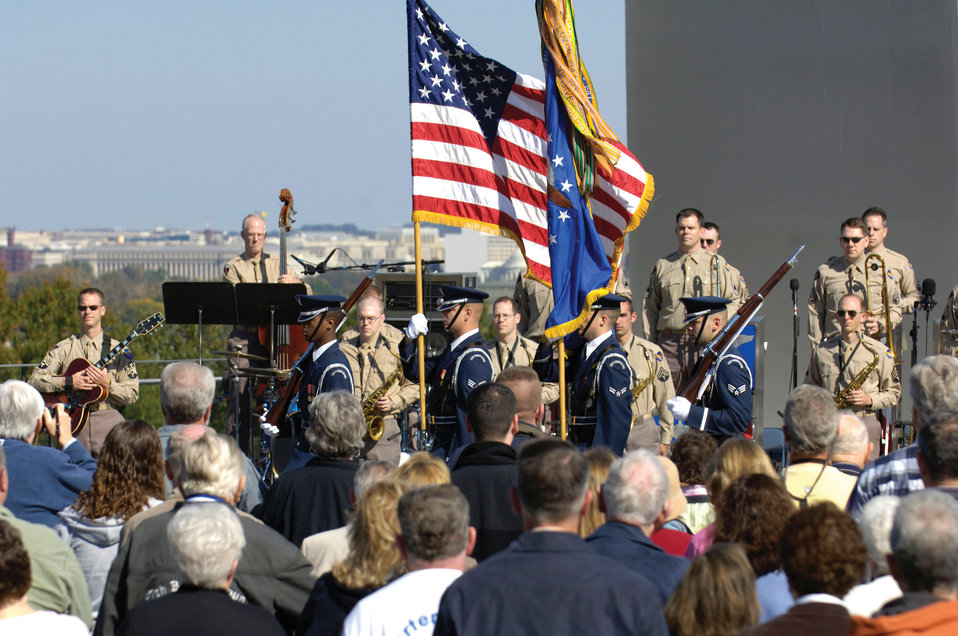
Airmen of Note at memorial

The Air Force Honor Guard performs the